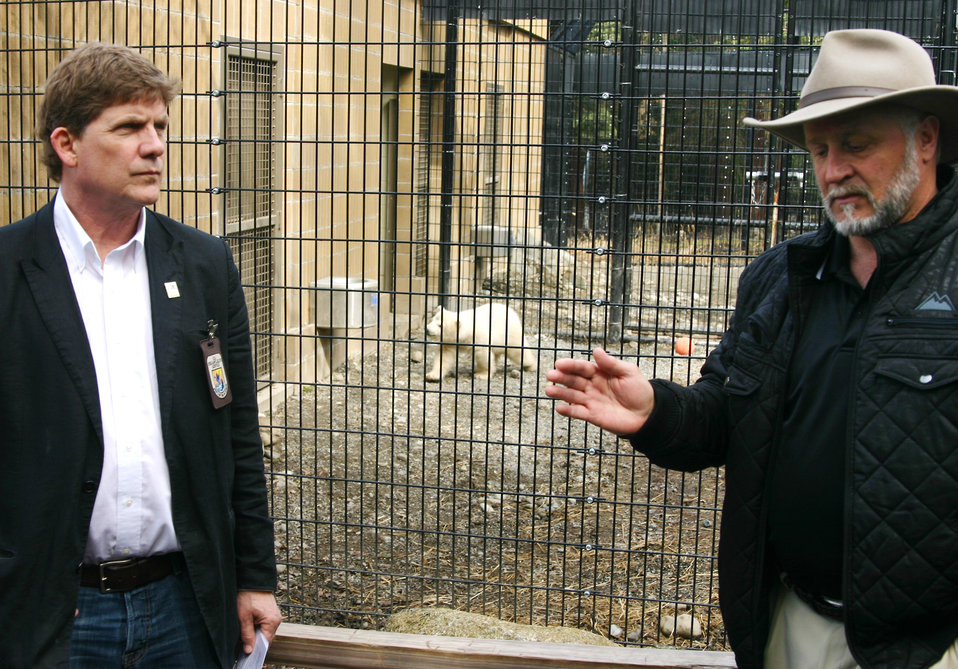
Haskett-Kali-Lampi

FWS Regional Director Geoffrey Haskett talks with Alaska Zoo Executive Director Pat Lampi with Kali in the background Photo Credit: L. Whitehouse/USFWS